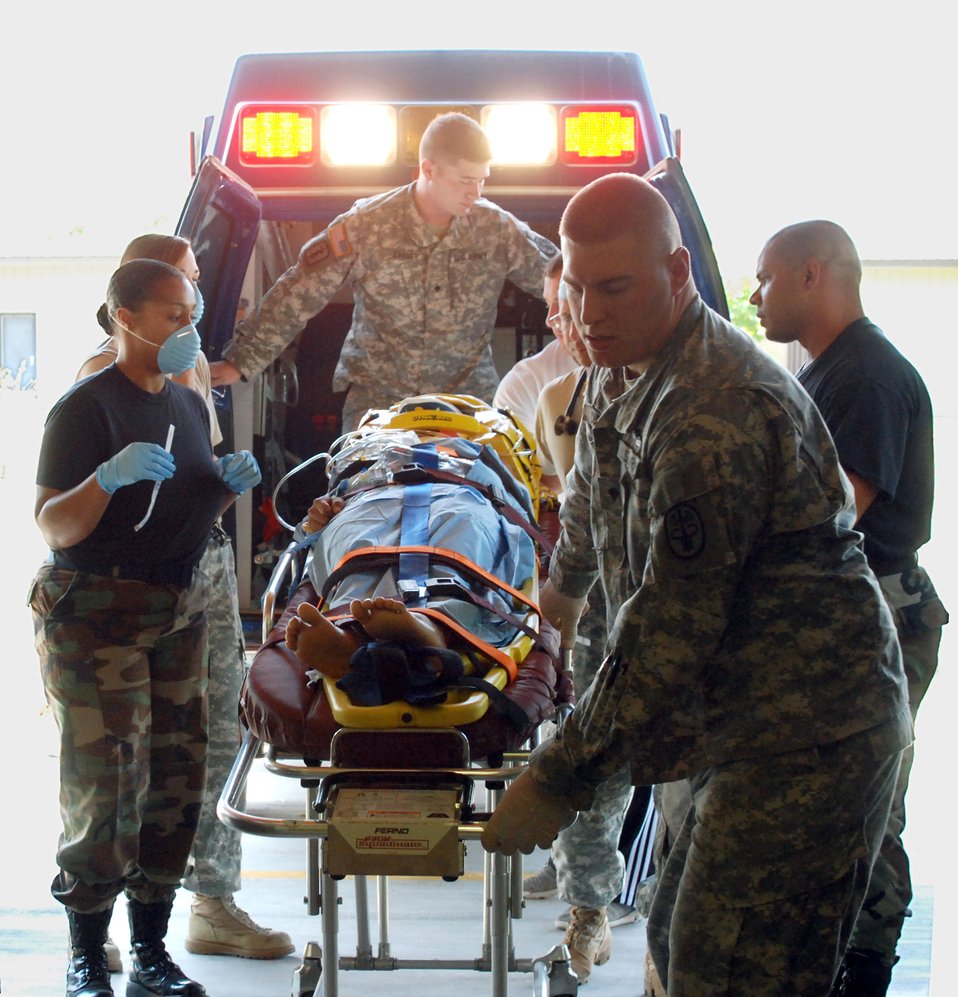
Servicemembers assist in Honduran medical emergency

Joint Task Force-Bravo Medical Element staff transport an accident victim from an ambulance to the emergency room Feb. 26 at Soto Cano Air Base, Honduras. JTF-Bravo members assisted local medics after a truck carrying about 30 people rolled over near Comayagua, Honduras.